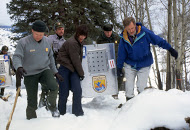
Gray wolf

Scientific name: Canis lupus
Status: Endangered Non-Essential Experimental Population Delisted
Photo credit: USFWS
Reintroduced wolves being carried to acclimation pens, Yellowstone National Park, January, 1995